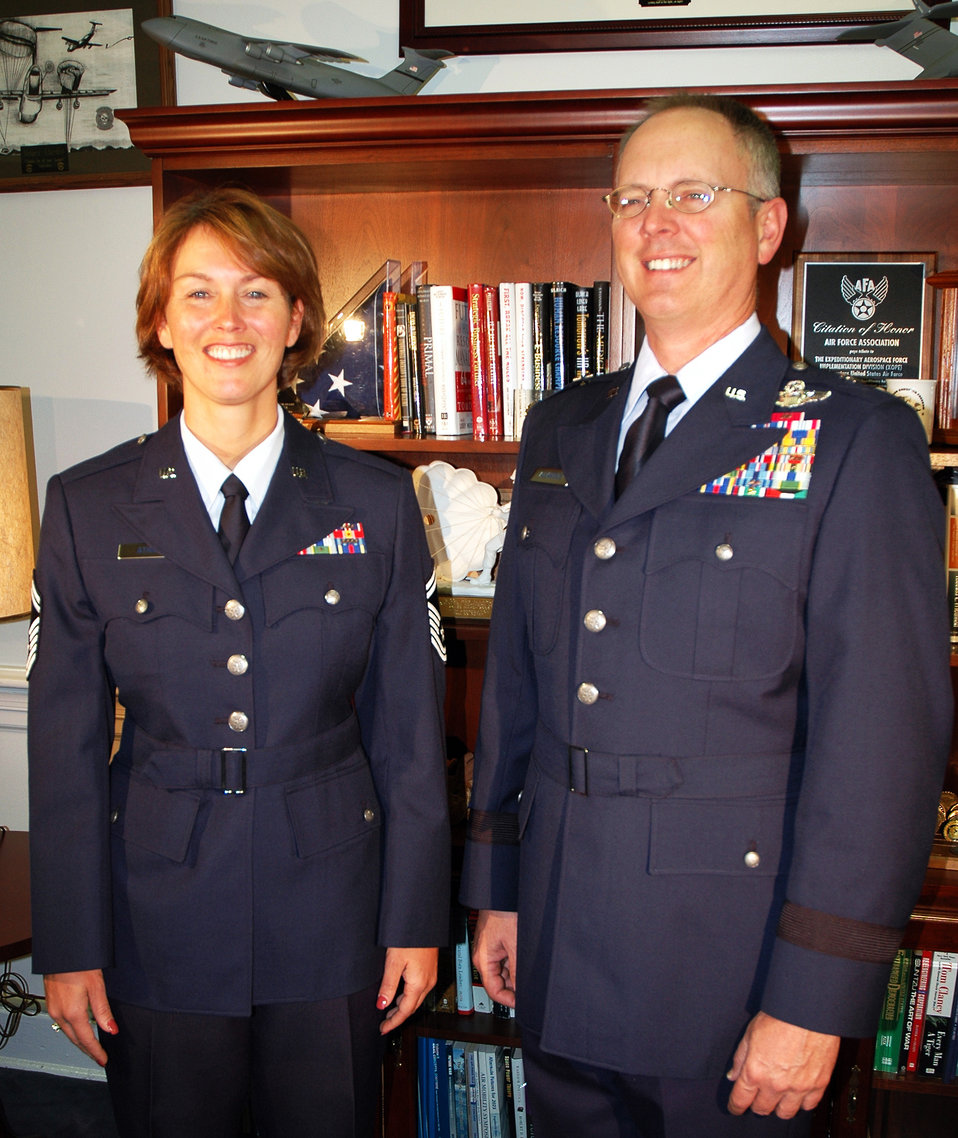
New service dress prototypes peak interest

Brig. Gen. Robert Allardice and Senior Master Sgt. Dana Athnos show off prototypes of the Hap Arnold heritage coat in the Pentagon on Monday, May 15, 2006. General Allardice is director of Airmen development and sustainment and Sergeant Athnos is a member of the Air Force uniform board.